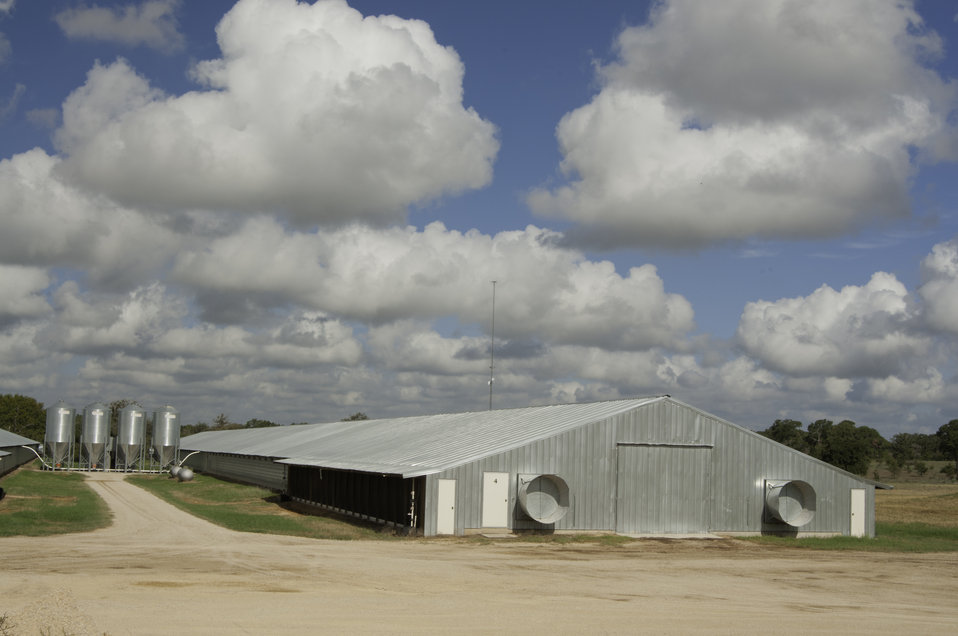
A poultry house sits in the sun on the Bobby Morgan Poultry Farm Luling, TX on Aug. 23, 2013.